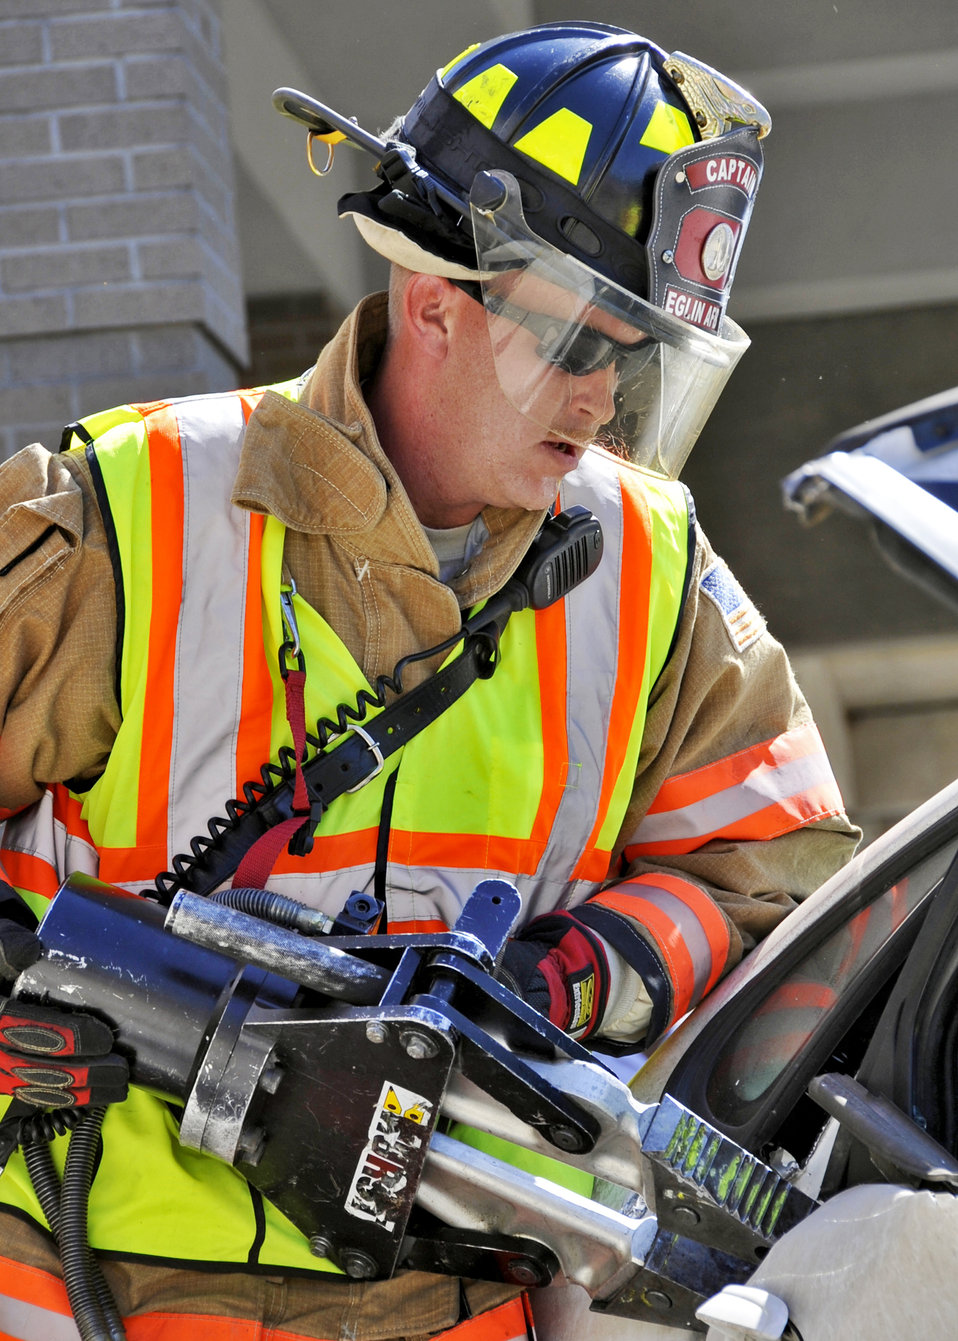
Showing off the 'jaws'

Staff Sgt. Tim Llewellyn, a 96th Civil Engineer Squadron firefighter, uses the